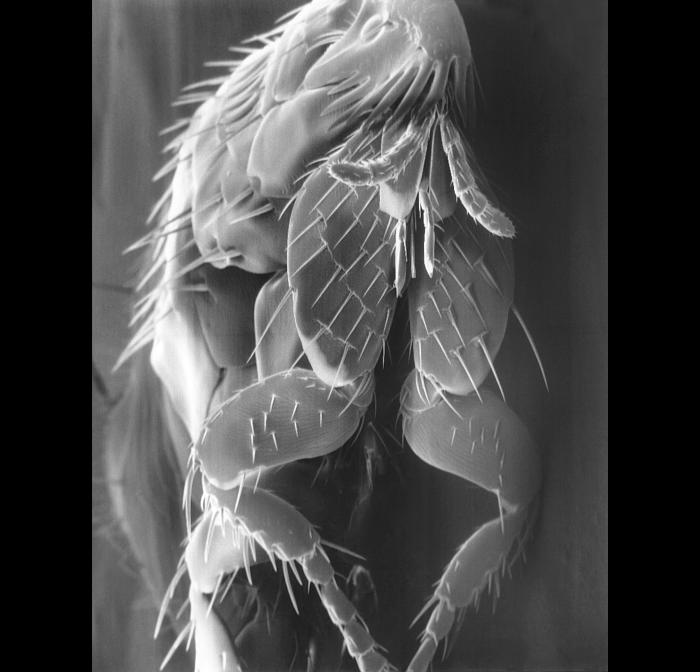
Scanning electron micrograph (SEM) of a parasitic flea.